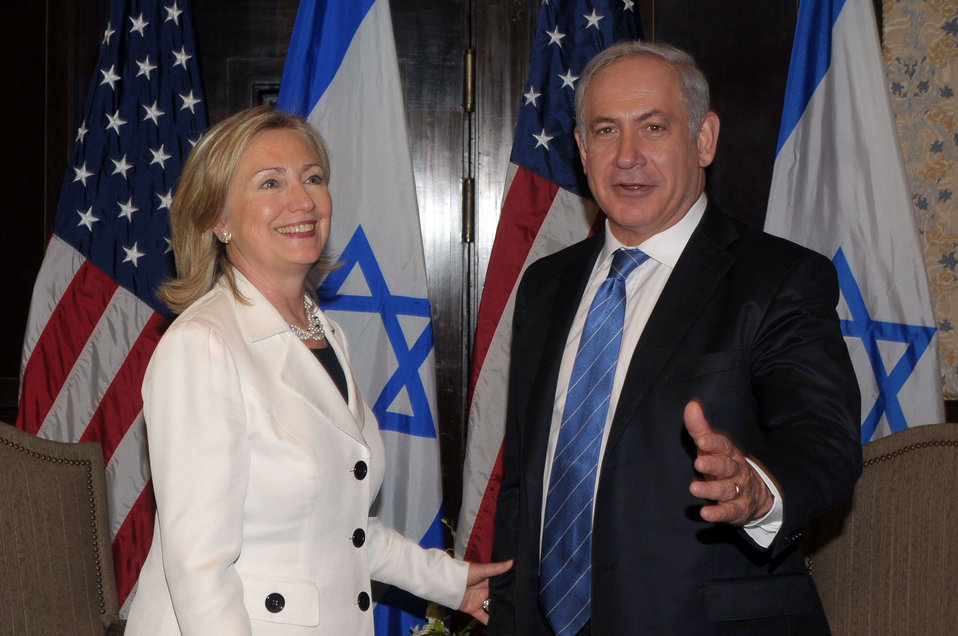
Secretary Clinton Meets With Israeli Prime Minister Netanyahu

U.S. Secretary of State Hillary Rodham Clinton meets with Israeli Prime Minister Benjamin Netanyahu in Sharm El-Sheikh, Egypt, on September 14, 2010.